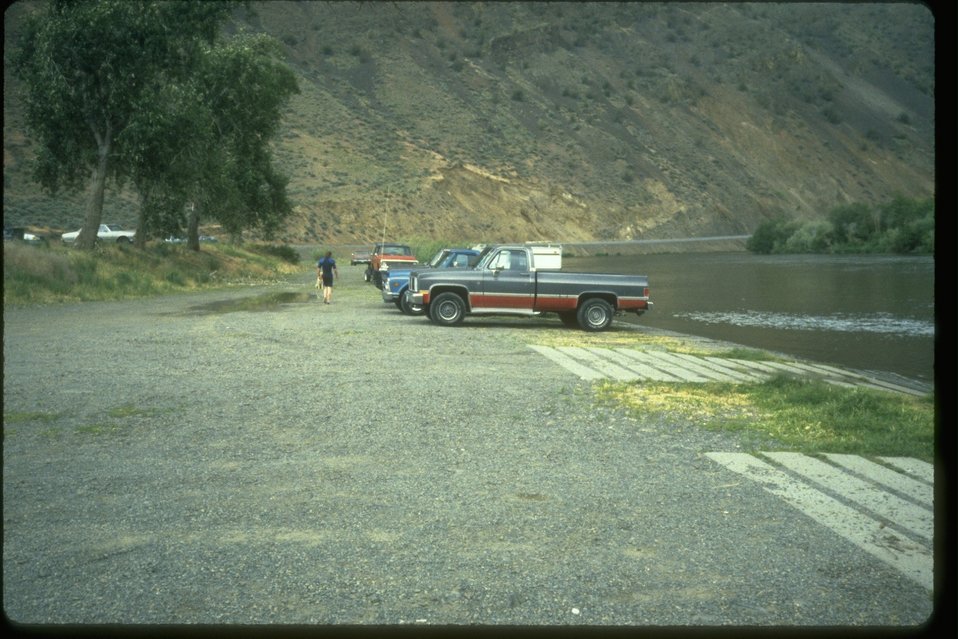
Boat launch at Roza Recreation Site in Yakima River Canyon.